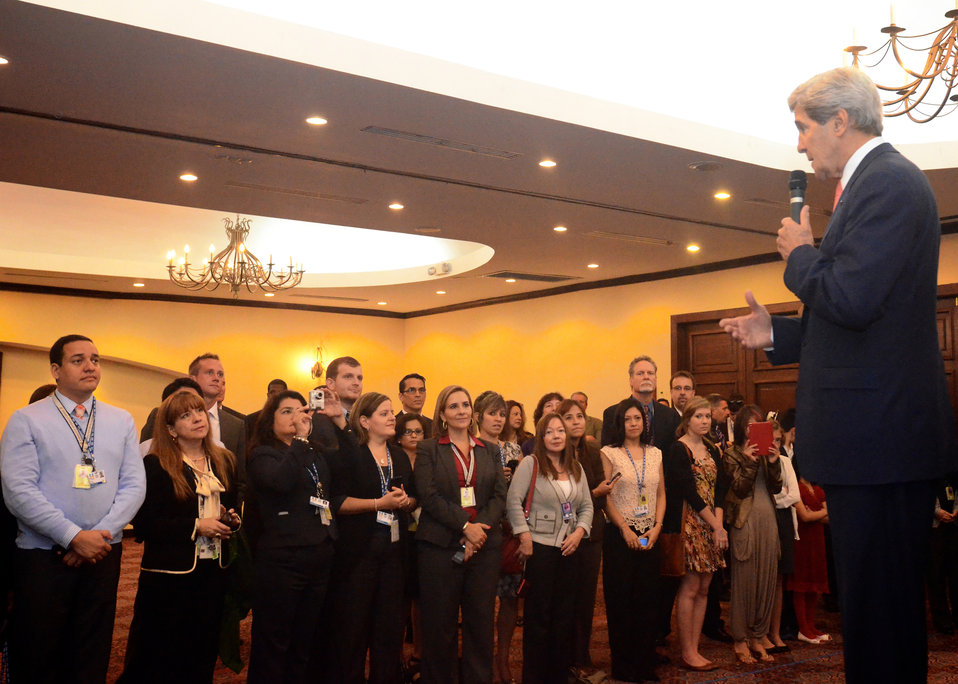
Secretary Kerry Addresses Embassy Guatemala City Staff

U.S. Secretary of State John Kerry addresses the staff of the U.S. Embassy in Guatemala City, Guatemala, before participating in the General Assembly of the Organization of American States Plenary Session in Antigua, Guatemala, on June 5, 2013.